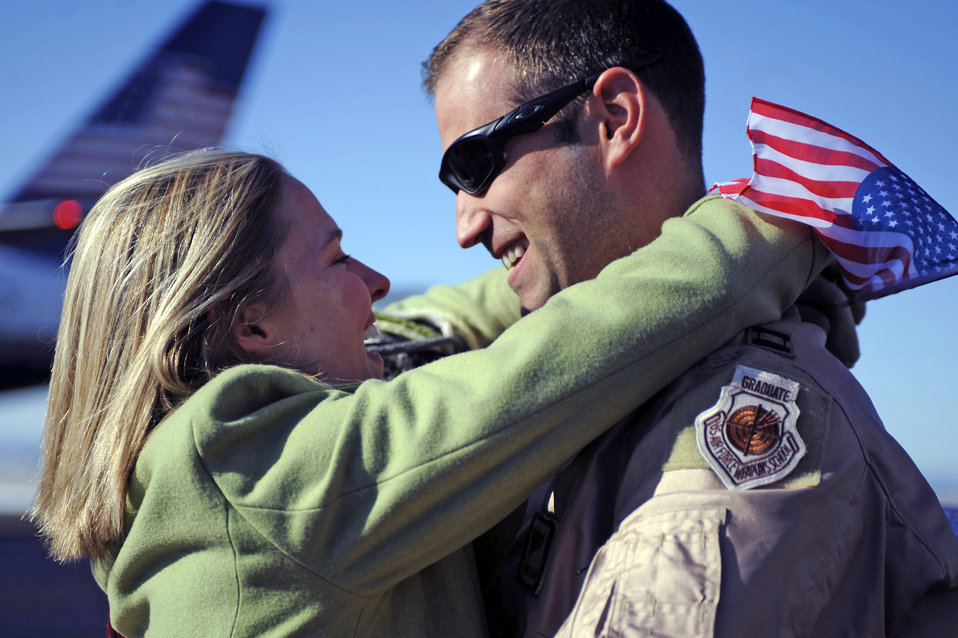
Ellsworth Airmen return home

Capt. Jason Corrigan hugs his girlfriend after returning from his deployment to Southwest Asia Jan. 27, 2010, at Ellsworth Air Force Base, S.D. While deployed to Southwest Asia, Captain Corrigan provided support to operations Iraqi Freedom and Enduring Freedom. Captain Corrigan is a 37th Bomb Squadron B-1B Lancer pilot.